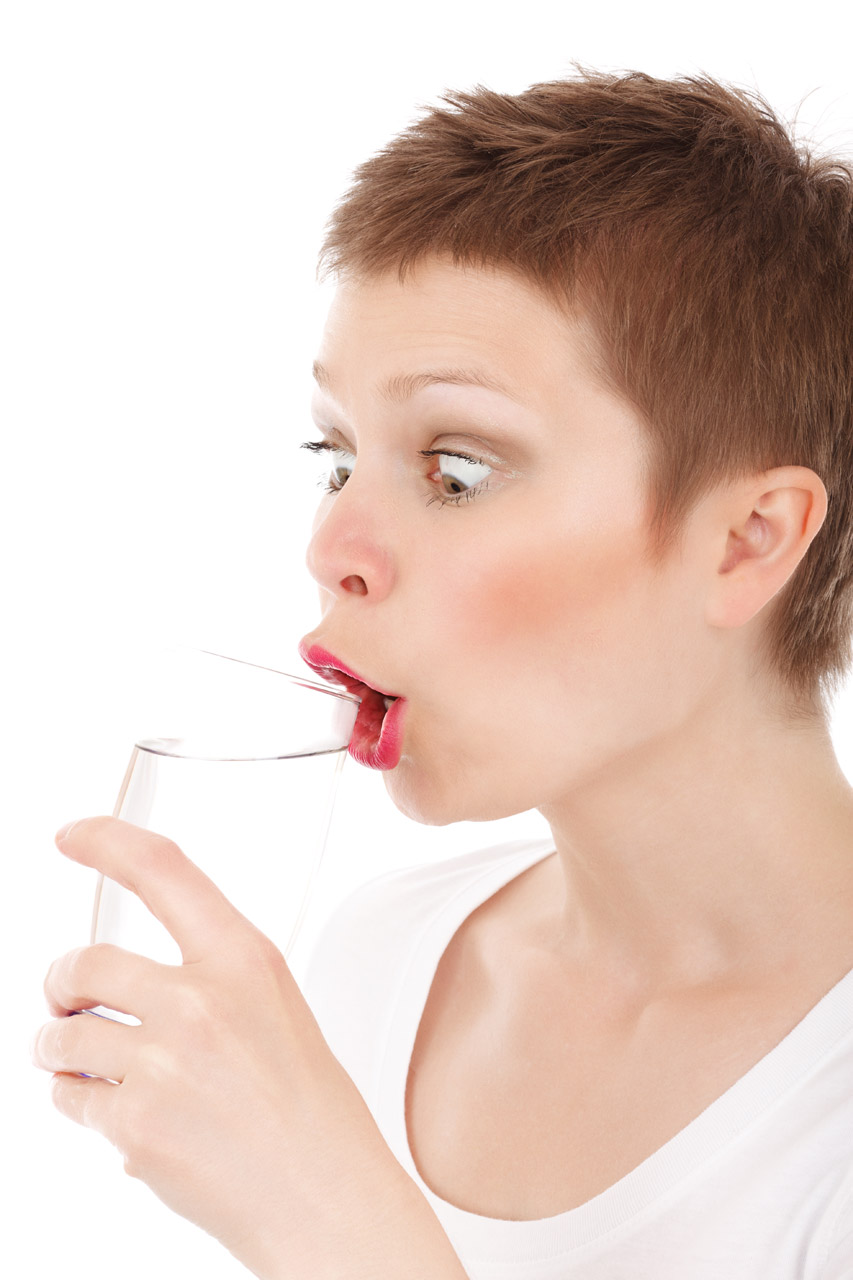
Thirsty woman

Really thirsty young woman with a glass of fresh water isolated on white background.